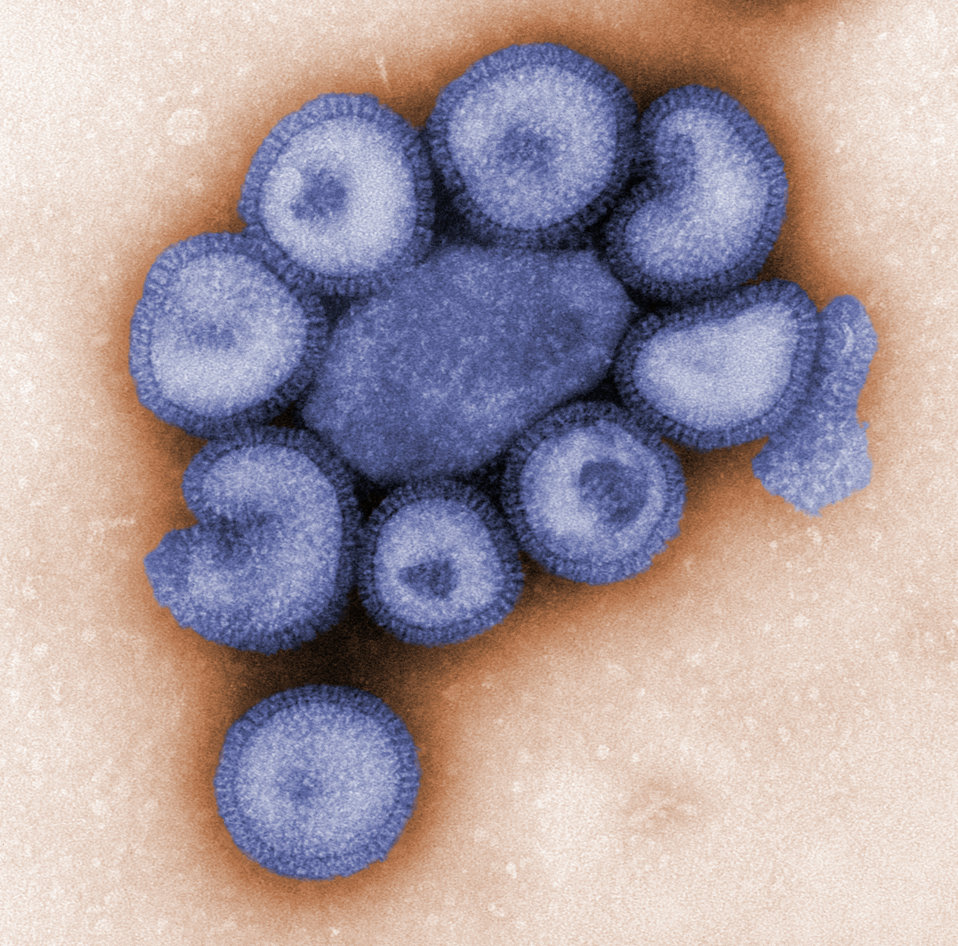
This colorized negative-stained transmission electron micrograph (TEM) depicts the ultrastructural details of a number of influenza virus particles, or 'virions'. A member of the taxonomic family Orthomyxoviridae, the influenza virus is a single-stranded RNA organismThe flu is a contagious respiratory illness caused by influenza viruses. It can cause mild to severe illness, and at times can lead to death. The best way to prevent this illness is by getting a flu vaccination each fall.Every year in the United States, on average:- 5% to 20% of the population gets the flu- more than 200,000 people are hospitalized from flu complications, and- about 36,000 people die from flu. Some people, such as older people, young children, and people with certain health conditions, are at high risk for serious flu complications. See PHIL 8432 for a black and white version of this image.